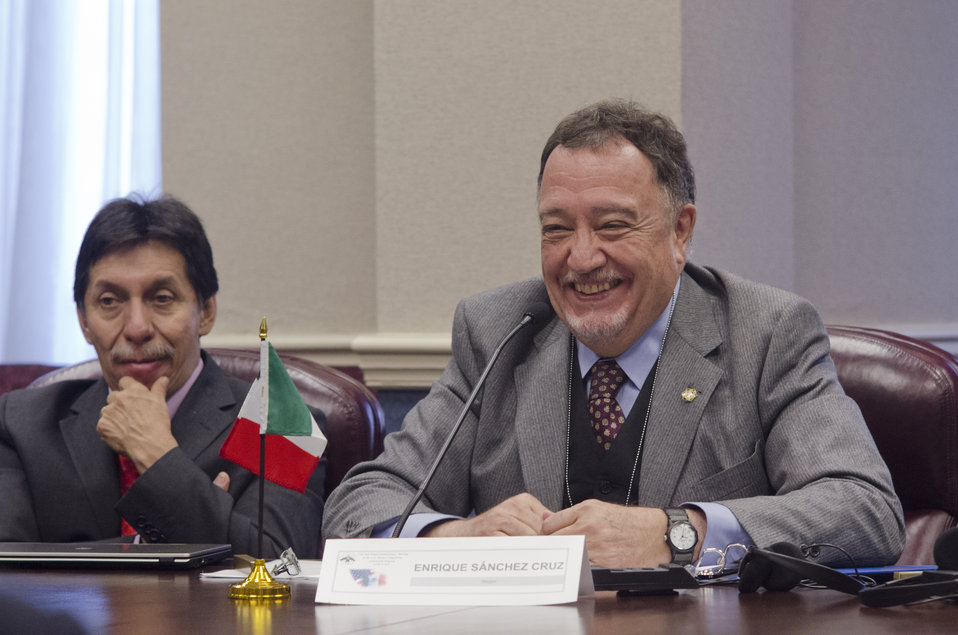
Mexican Agriculture and Food Safety Chief Dr. Enrique Sanchez Cruz smiles at the U.S. Department of Agriculture’s (USDA) 73rd and Final Commissioners Meeting of the U.S. – Mexico Cooperative Screwworm Program in the Williamsburg room at USDA in Washington, D.C. on Oct. 5, 2012.